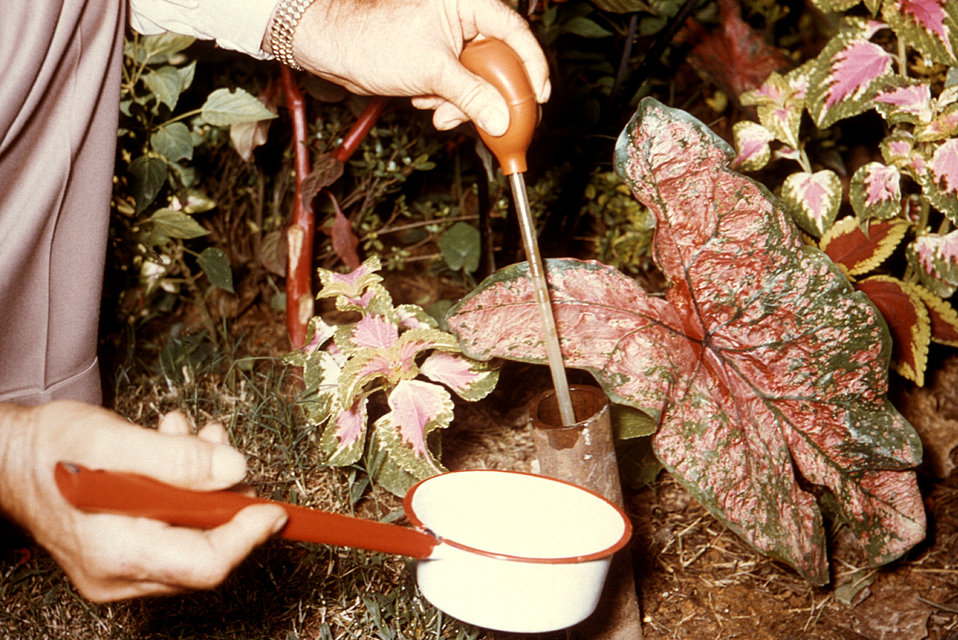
This photograph depicts an entomologic field technician aspirating a water sample from a small outdoor container in order to investigate the presence of Aedes aegypti mosquito eggs. Adult A. aegypti mosquitoes are known vectors responsible for the transmission of Dengue fever to humans.